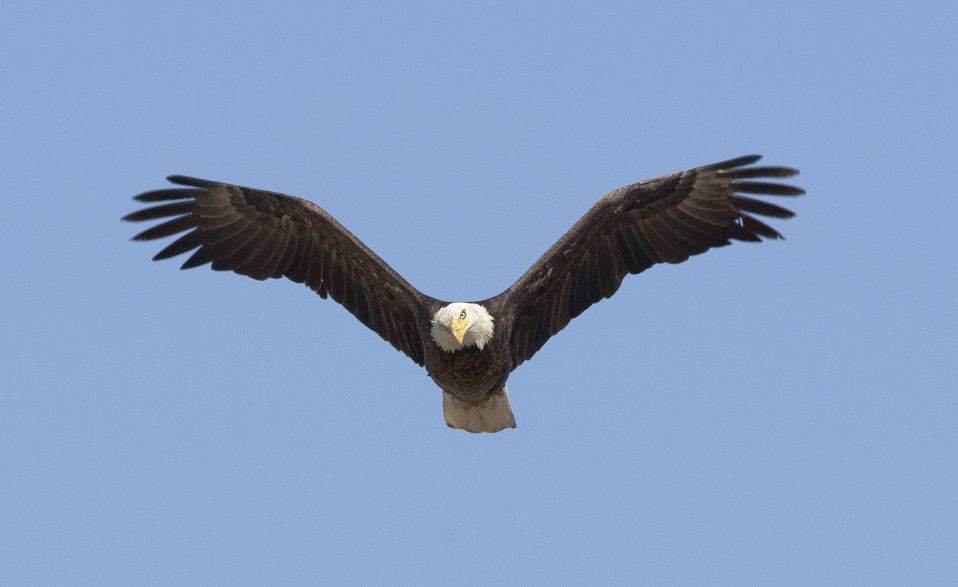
Bald Eagle

The lands of Benton Lake National Wildlife Refuge were established to protect and provide habitat for migratory birds that cross State lines and international borders and are by law a Federal trust responsibility.

The refuge is of great value to waterfowl and shorebirds, as well as other migrating water-dependent bird species, because of the diversity of wetland and upland habitats that provide for the diverse life cycle needs of these species.